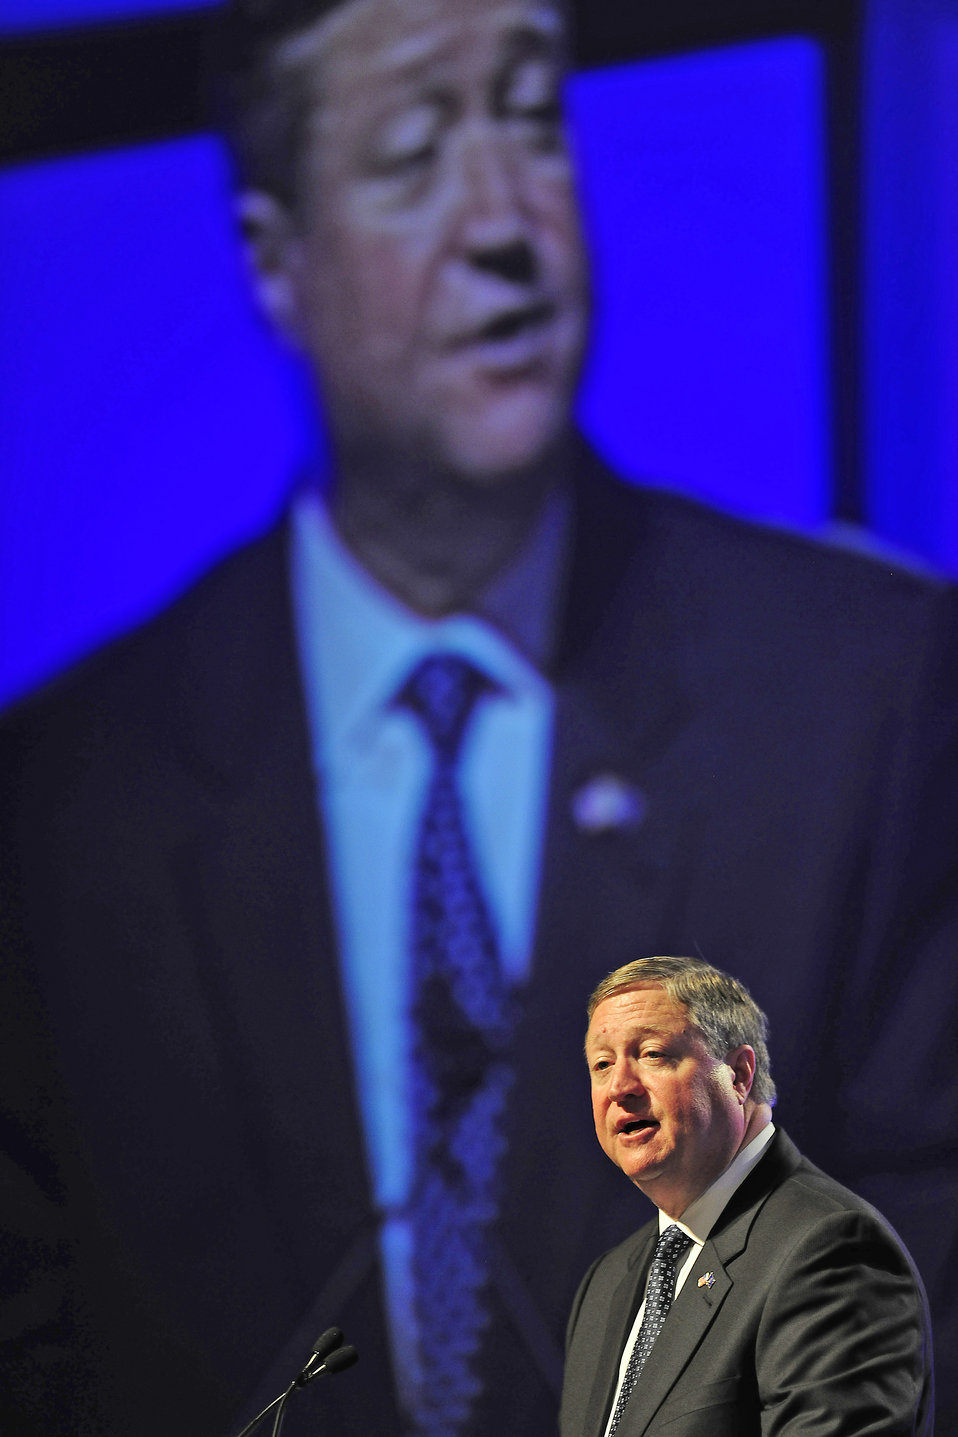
Keynote Speech for Chief Master of the Air Force James Roy

Secretary of the Air Force Michael Donley addresses some 1,000 people attending the Air Force Honors Banquet and Chief Master Sergeant of the Air Force Awards presentation on Aug. 18, 2010, in Atlanta. Secretary Donley spoke about the Air Force's commitment to Airmen and their families, and discussed the importance of strategic balance within the service. The banquet was part of the Air Force Sergeants Association Professional Airmen's Conference and International Convention.